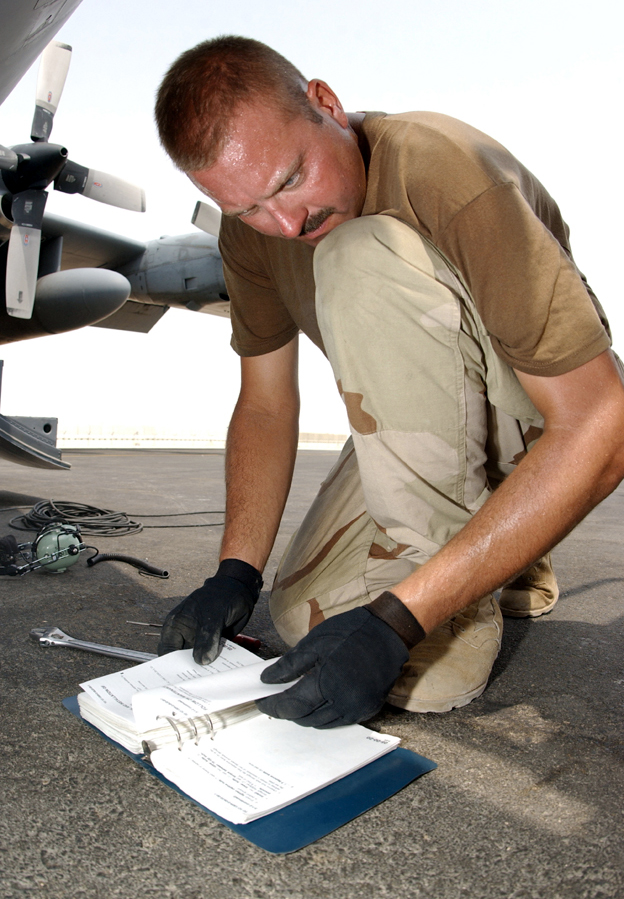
Hot tarmac

OPERATION IRAQI FREEDOM -- Tech. Sgt. Brian Hardy reviews a job guide before removing and installing an aircraft nose radome on a C-130 Hercules. The old one was damaged by lightning. Hardy is a crew chief with the Delaware Air National Guard's 166th Airlift Wing. Airmen endure temperatures of at least 115 degrees daily on the flightline at their forward-deployed location in Southwest Asia.